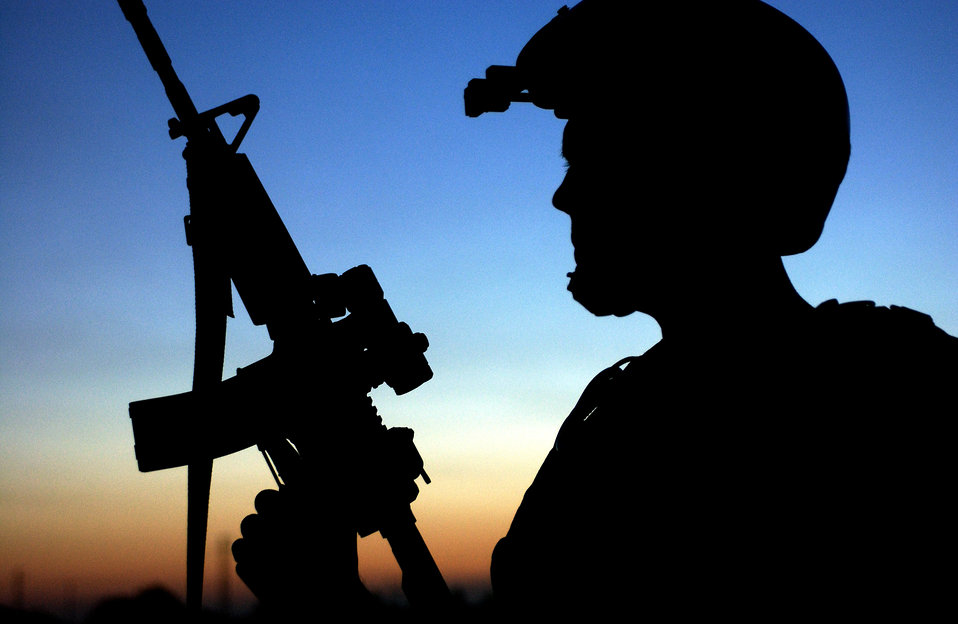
Combat shadow

BALAD AIR BASE, Iraq -- A U.S. Air Force tactical air patrol party Airman with the 116th Expeditionary Air Support Operations Squadron scans for threats here April 11.